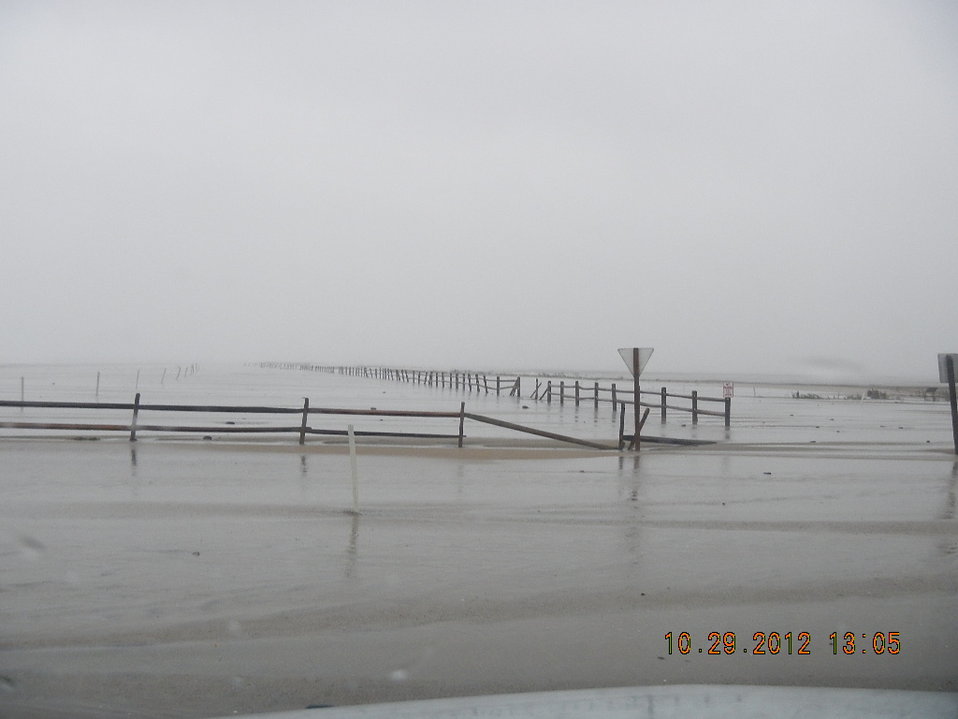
Parking Lot 2 at Chincoteague National Wildlife Refuge (VA)

Parking lot 2 at Chincoteague on Monday afternoon 10/29/12.